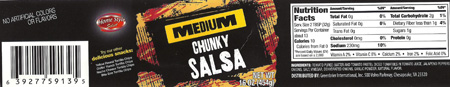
RECALLED – Salsa

July 22, 2013 – Product Recall – Olam Tomato Processors, Inc. Announces Voluntary Recall of Mild and Medium Chunky Salsa Because It May Contain Large Glass Pieces.